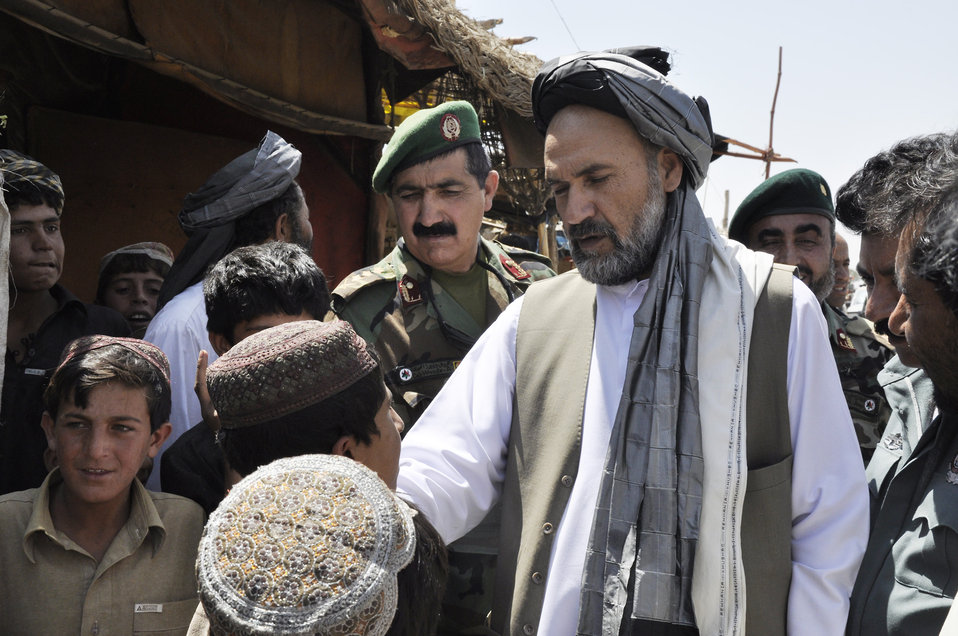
Servicemembers help reconnect Afghan, government

Gov. Mohammad Ashraf Naseri questions children during his Aug. 24, 2009, trip to Sha Joy district to discuss issues and concerns with village elders in the Zabul Province, Afghanistan. American servicemembers of the Provincial Reconstruction Team-Zabul provided transportation and security.